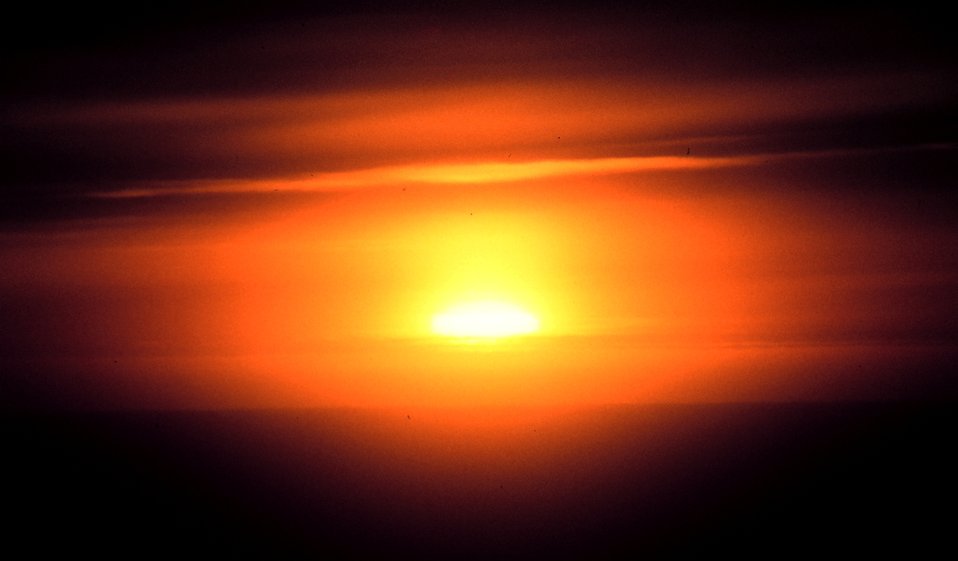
Haze and clouds obscure the setting sun